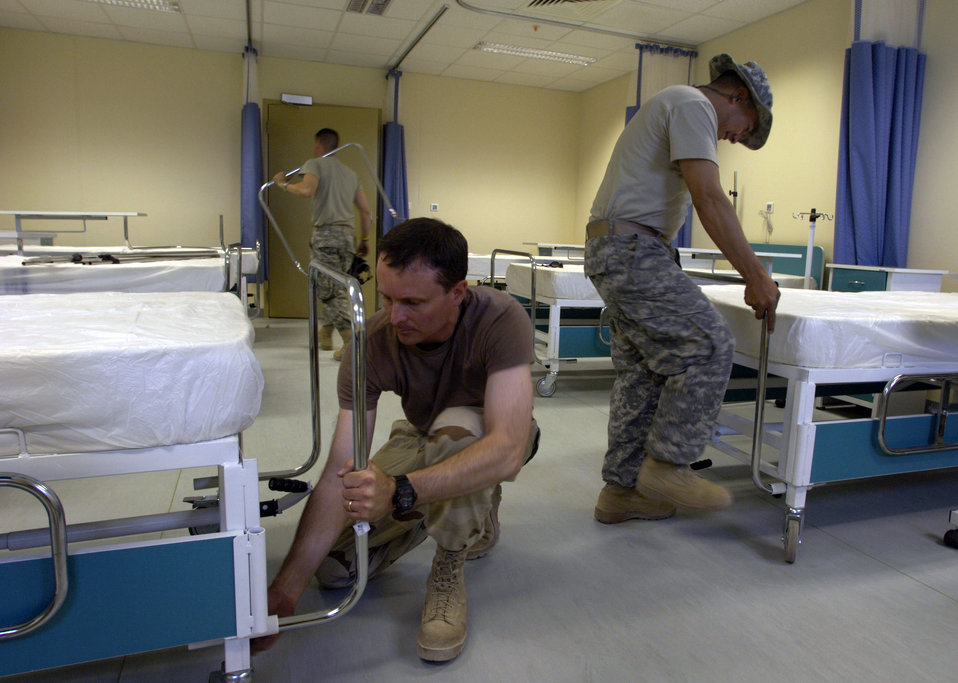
Airmen equip Afghan hospital with supplies, knowledge

Lt. Col. Gil Weston (foreground), Master Sgt. Doug Suddueth (right background) and Army Sgt. 1st Class Antonio Rivas install hospital beds Aug. 18. The beds were transported from a warehouse across the street to the newly built $6.5 million, 50-bed hospital on the Afghan National Army's Hero Camp, located just outside Kandahar Airfield in southern Afghanistan. Colonel Weston is a medical health facilities planner deployed from Atlanta. Sergeant Suddueth is a medical logistics technician deployed from Maxwell Air Force Base, Ala. Sergeant Rivas is deployed from Ft. Sam Houston, Texas. They are assigned to the Combined Security Transition Command-Afghanistan at Camp Eggers, Kabul, Afghanistan.